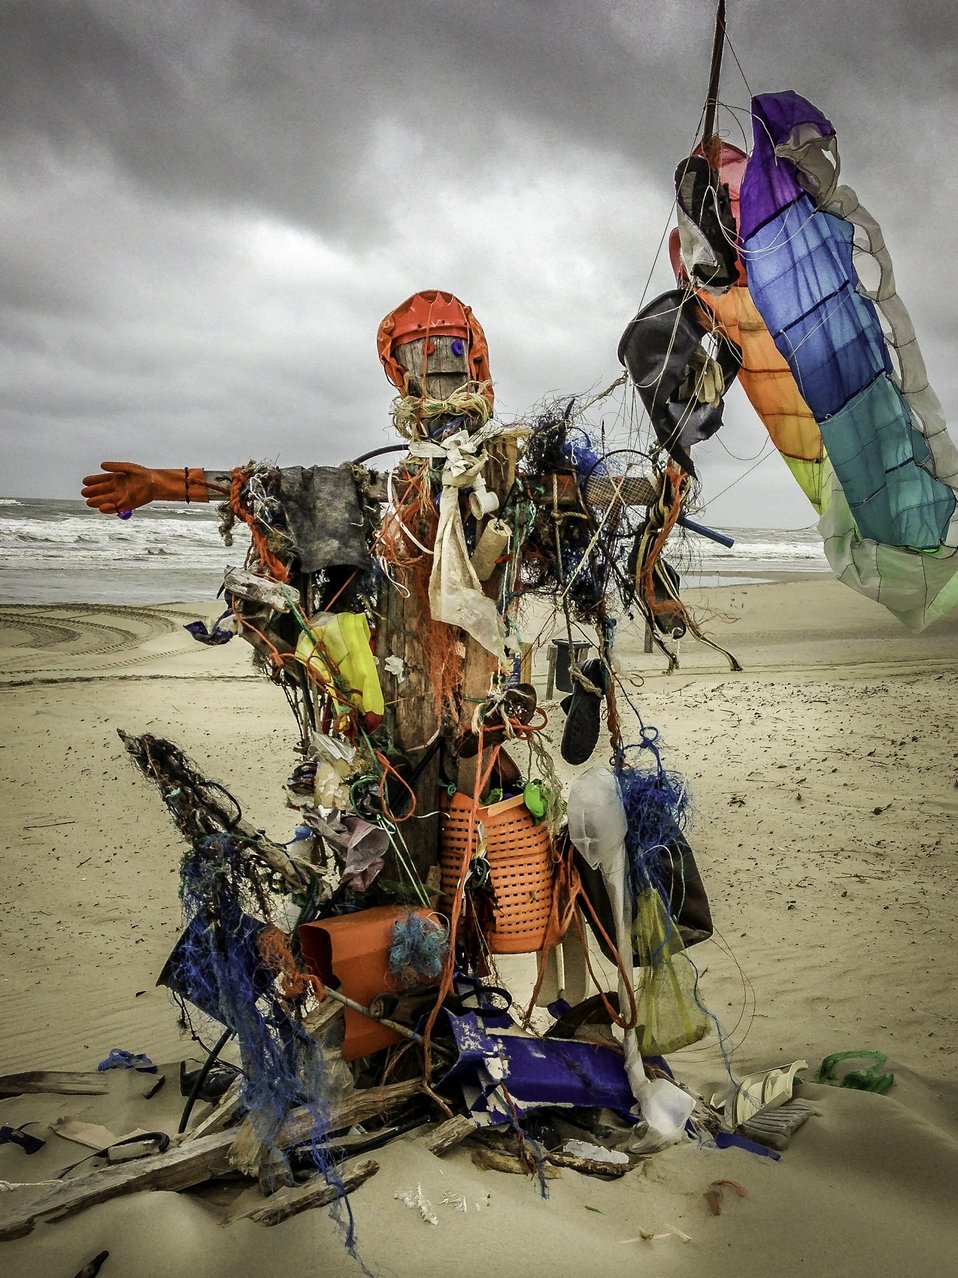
Beach pole

Pole beach in texel.